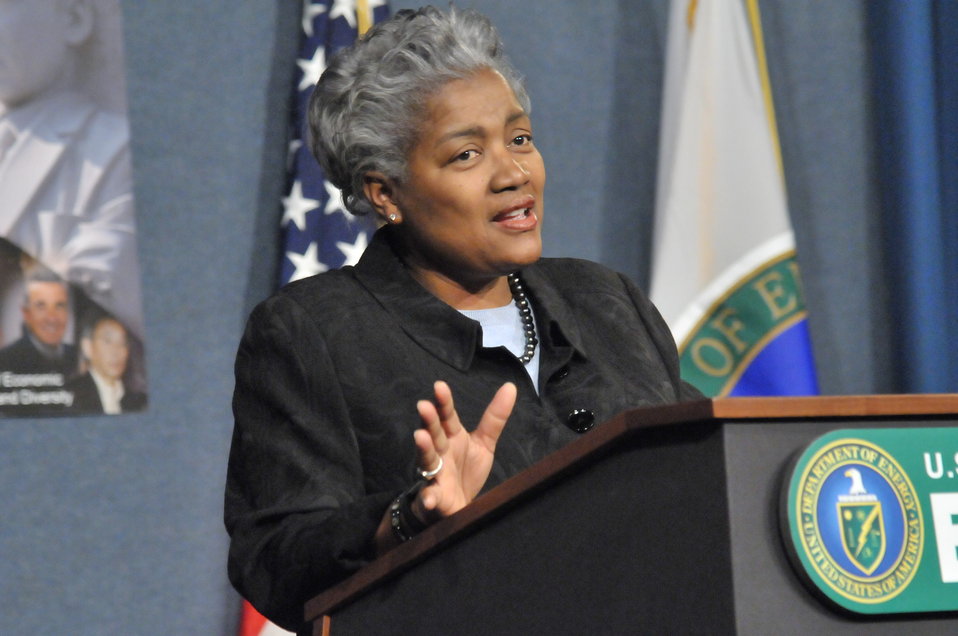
DEPARTMENT OF ENERGY -MARTIN LUTHER KING / BLACK HISTORY MONTH COMMEMORATIVE PROGRAM WITH DOE SECRETARY E. MONIZ IN ATTENDANCE